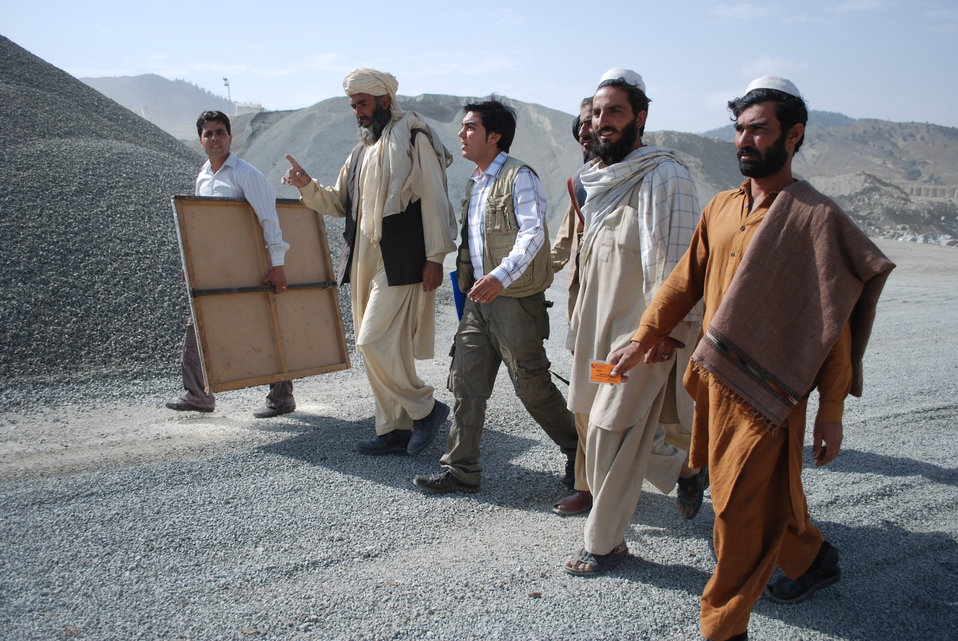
'On the Road' in Paktya Province